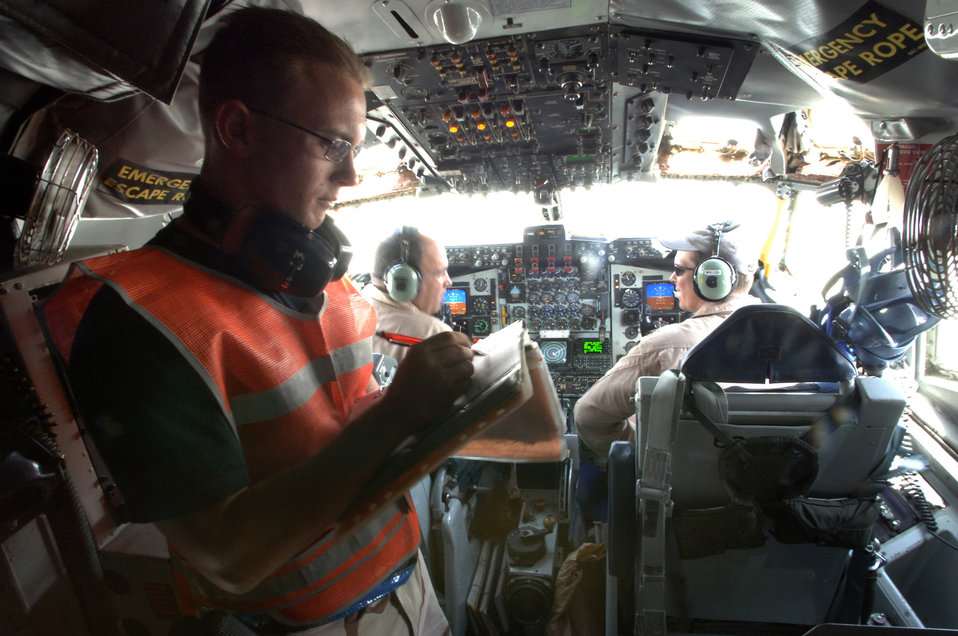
Boom uses steady hand to keep aircraft fighting

Airman 1st Class Jeremiah Johnson assists pilots Majs. Theodore Moore and Dan Malles in the preflight of a KC-135R Stratotanker prior to departure for an air refueling mission over Iraq. Airman Johnson is a communications and navigation specialist deployed to Southwest Asia from Grand Forks Air Force Base, N.D.